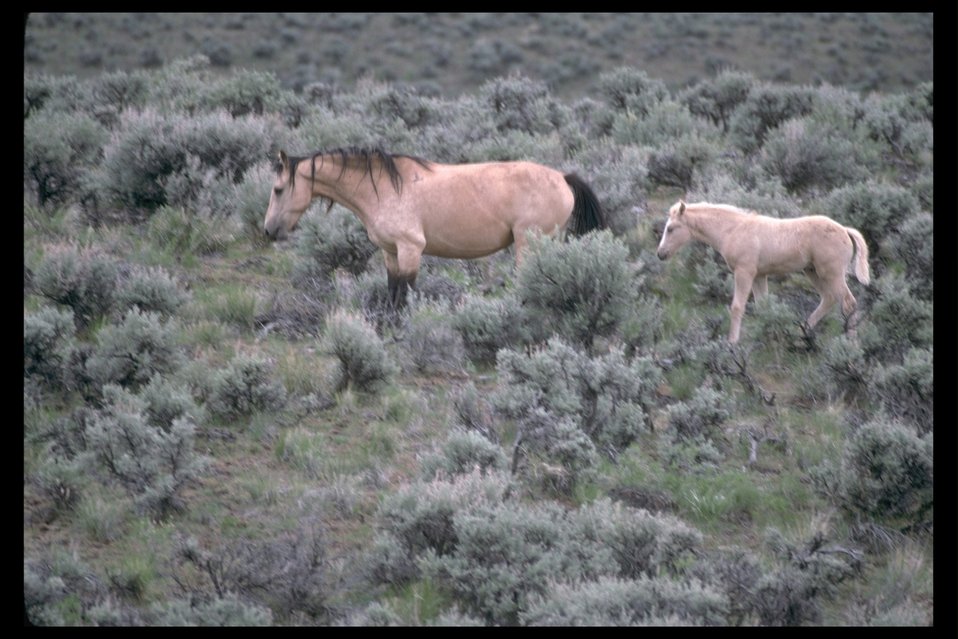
Wild horses in the South Steens HMA.